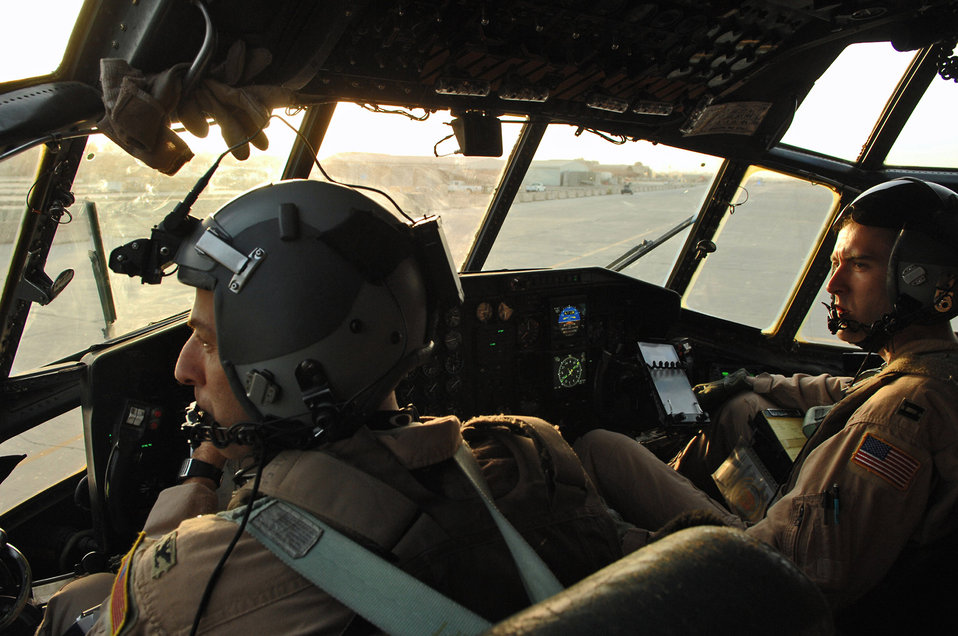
Herculean support for convoys

Col. Donald Kimminau and Capt. Jesse Caldwell look on as cargo is brought up to the aircraft for loading May 7 at Balad Air Base, Iraq. Members of the 777th Expeditionary Airlift Squadron help prevented convoy vehicles and servicemembers from traveling along improvised explosive device-laden Iraqi roads by airlifting troops and supplies throughout the area of operations. Colonel Kimminau is the 332nd Expeditionary Operations Group deputy commander deployed from Maxwell Air Force Base, Ala., and Captain Caldwell is a 777th Expeditionary Airlift Squadron aircraft commander deployed from Little Rock AFB, Ark.